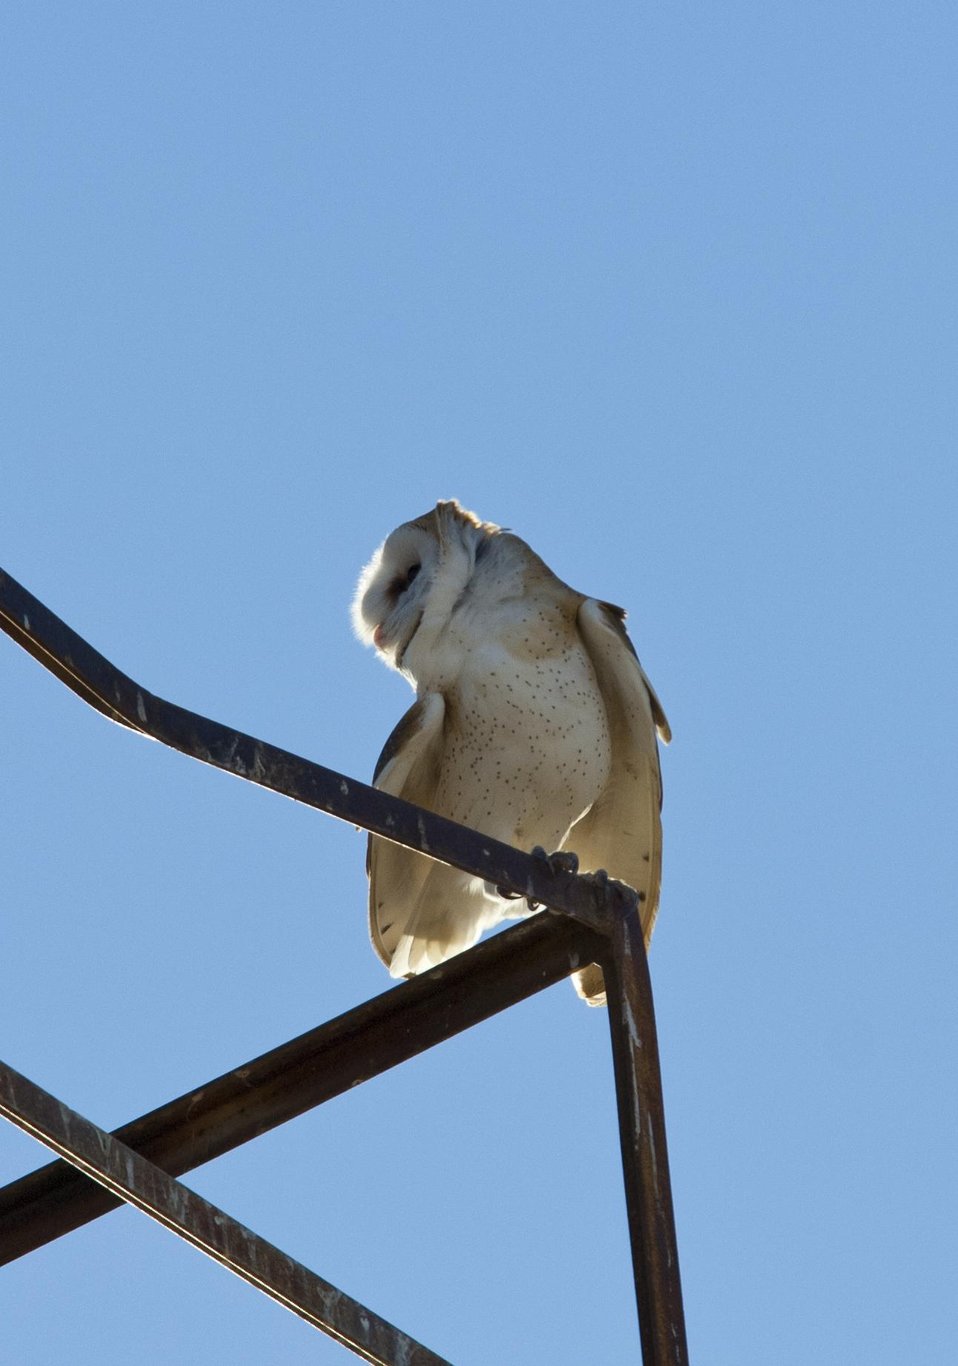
Barn Owl, Carrizo Plain 1